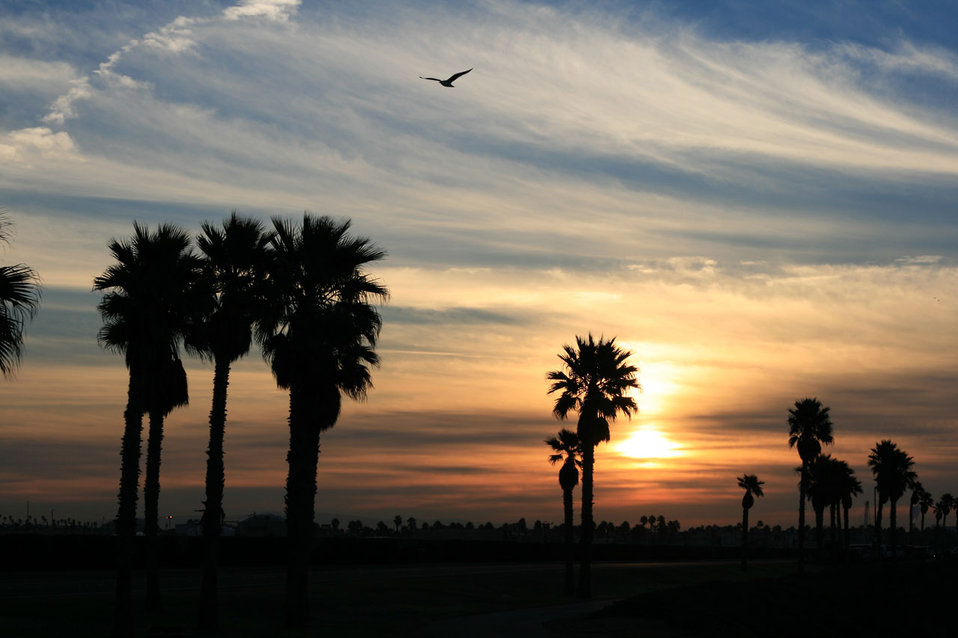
Pacific coast sunrise

Shot along pacific coast highway just north of huntington beach 16 dec 2007.